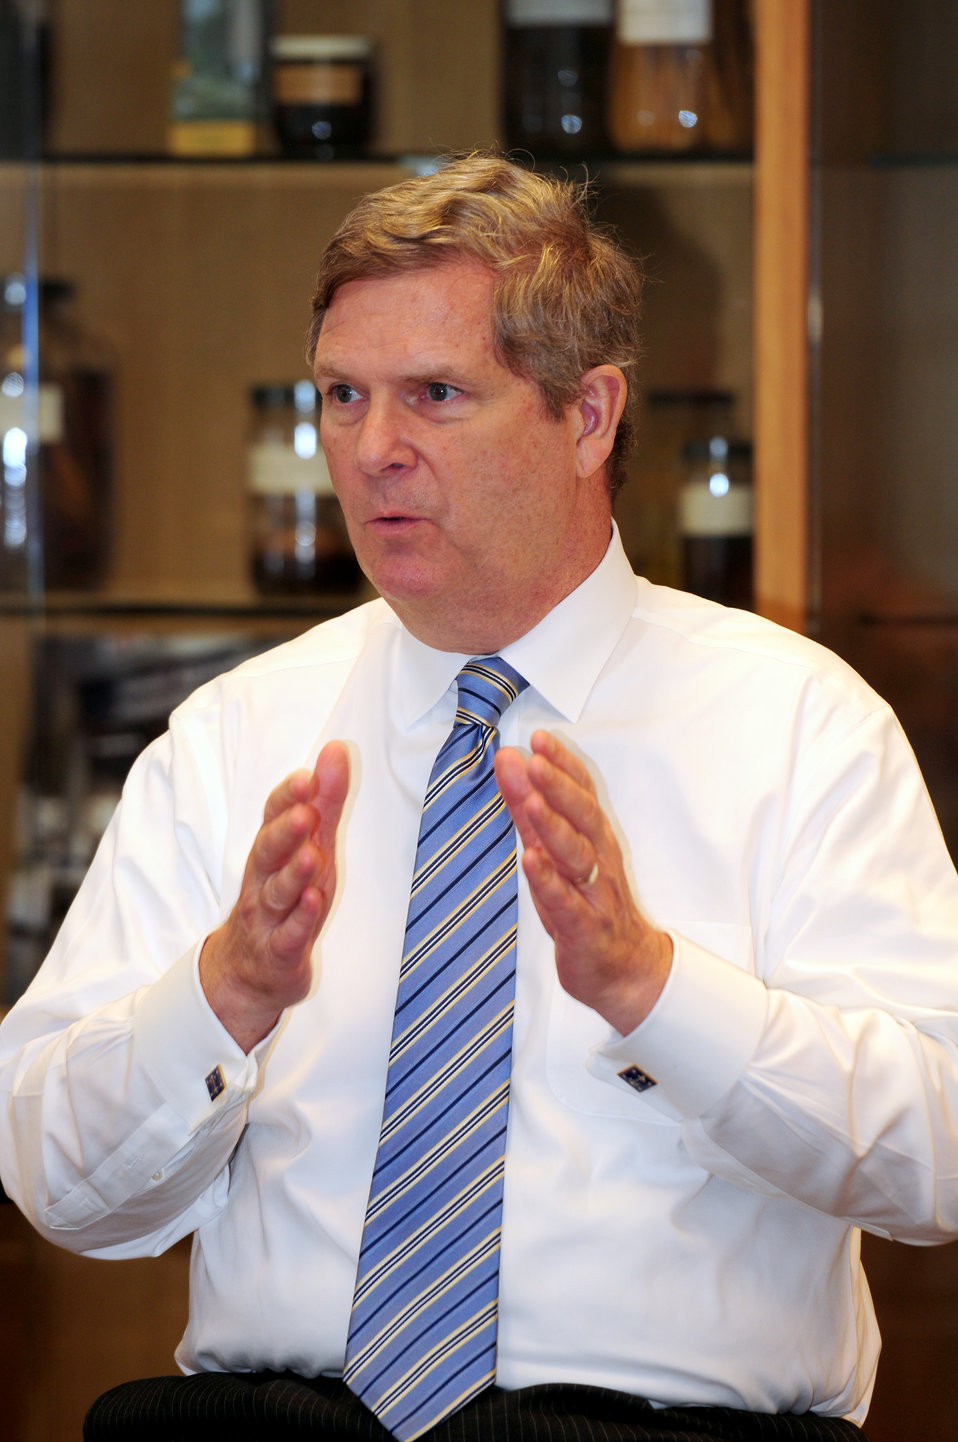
Agriculture Secretary Tom Vilsack speaks at a stakeholder meeting held at the State of Hawaii, Department of Agriculture Plant Quarantine Building in Honolulu, Hawaii, on Tuesday, January 10, 2012, to discuss USDA programs, agricultural challenges in Hawaii, and alternative energy.